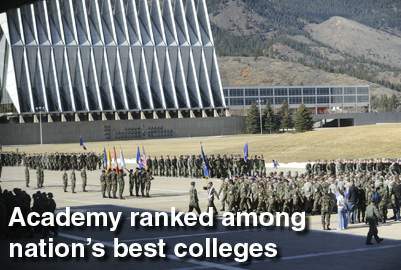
Academy ranked among nation's best colleges

The U.S. Air Force Academy's professors are among the most accessible in the nation, according to The Best 371 Colleges guide released by Princeton Review July 28.